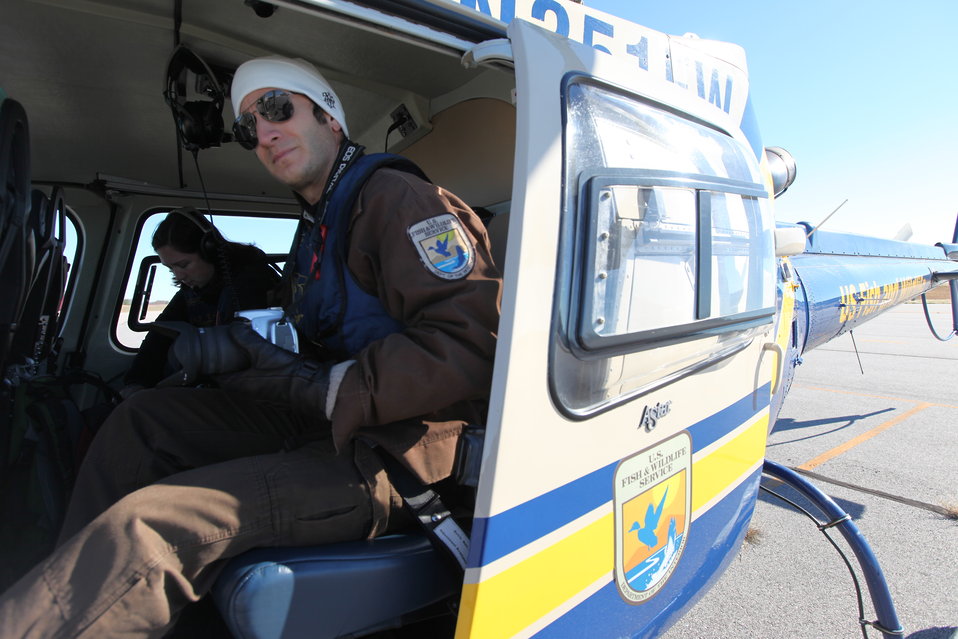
Juancarlos Geise

Rhode Island National Wildlife Refuge Deputy Refuge Manager Juancarlos Geise aboard the U.S. Fish and Wildlife Service helicopter.